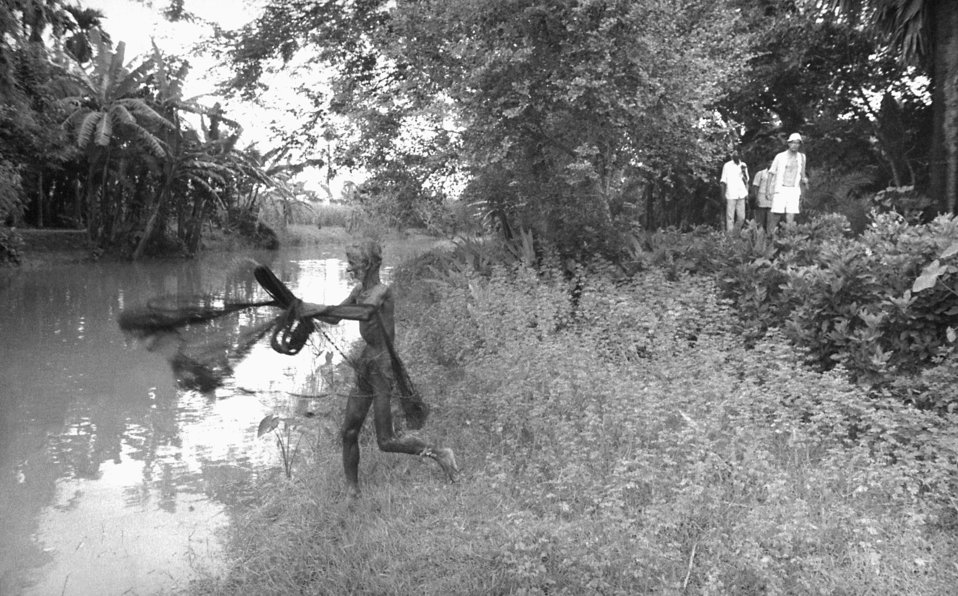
This man was casting his throw net into a local river, as on-duty public health smallpox investigators were searching out, and containing any cases found inside the perimeters of nearby villages. This image was part of a series provided by Dr. Stan Foster, and captured by Pierre Claquin, M.D., B.A.C., who at the time was a member of the World Health Organization's Smallpox Eradication Program. It was part of a series photographed by former E.I.S. officer, Stanley O. Foster M.D., M.P.H., and was one of a series entitled 'The Story of One Smallpox Jeep', which depicted the travails faced by the jeep, and its occupants of public health practitioners, as they road through the Bangladesh countryside in an attempt to eradicate smallpox from the country.